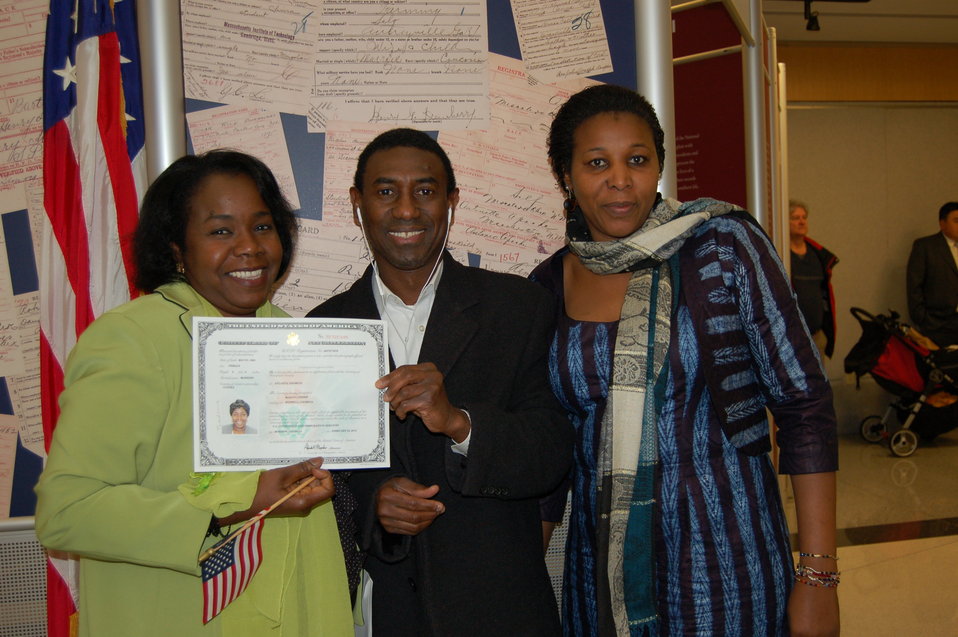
New Citizens